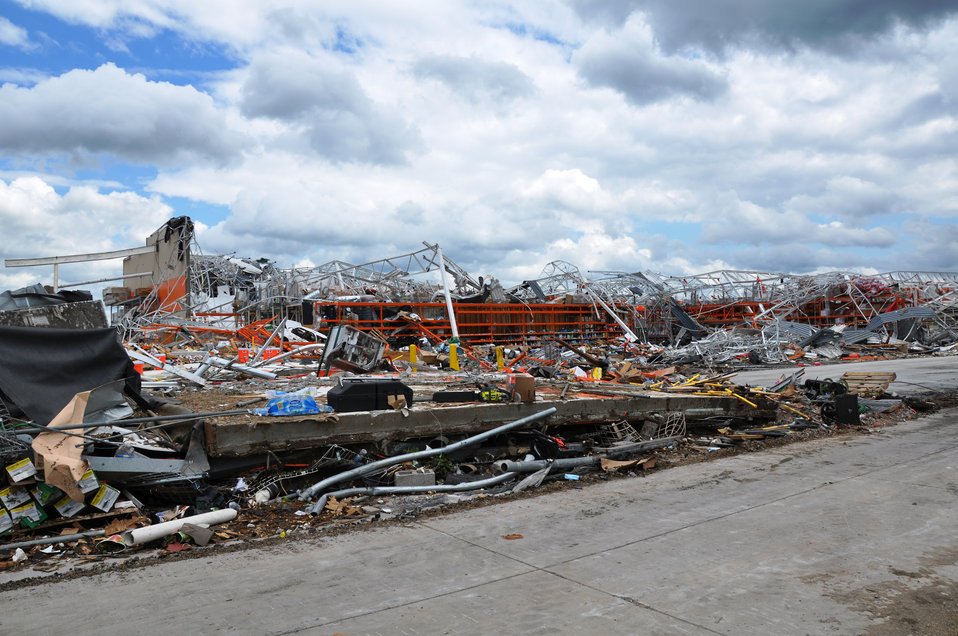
Joplin, Mo., Tornado

The remains of what was once a home improvement store in Joplin, Mo., showing the destructive power of the tornado that struck the area in May 2011.